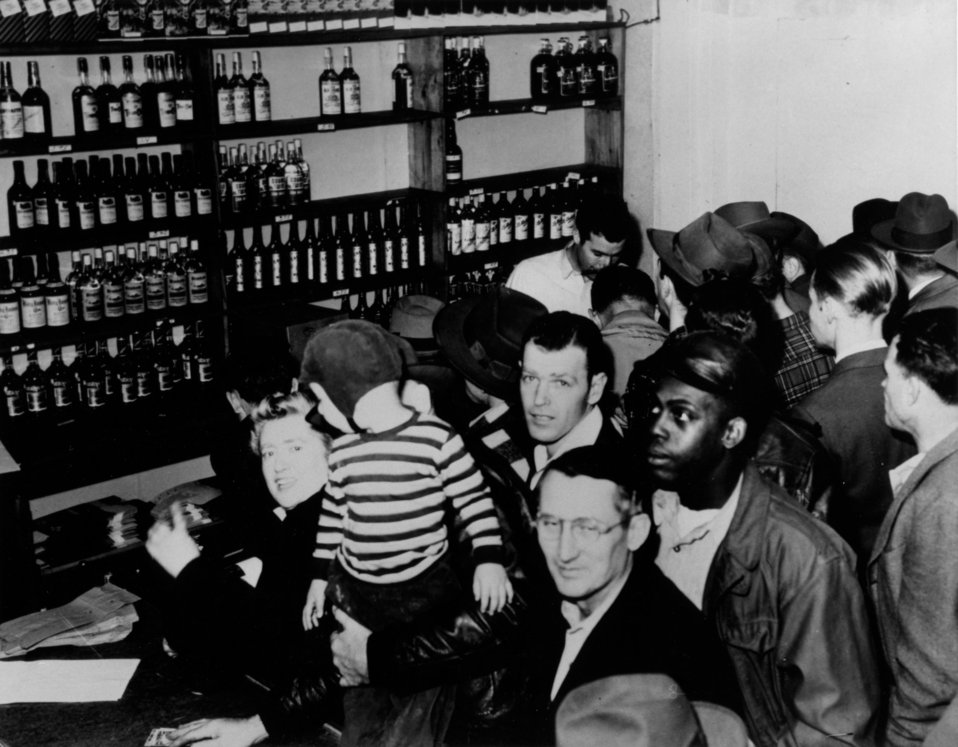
Business activity at Oak Ridge